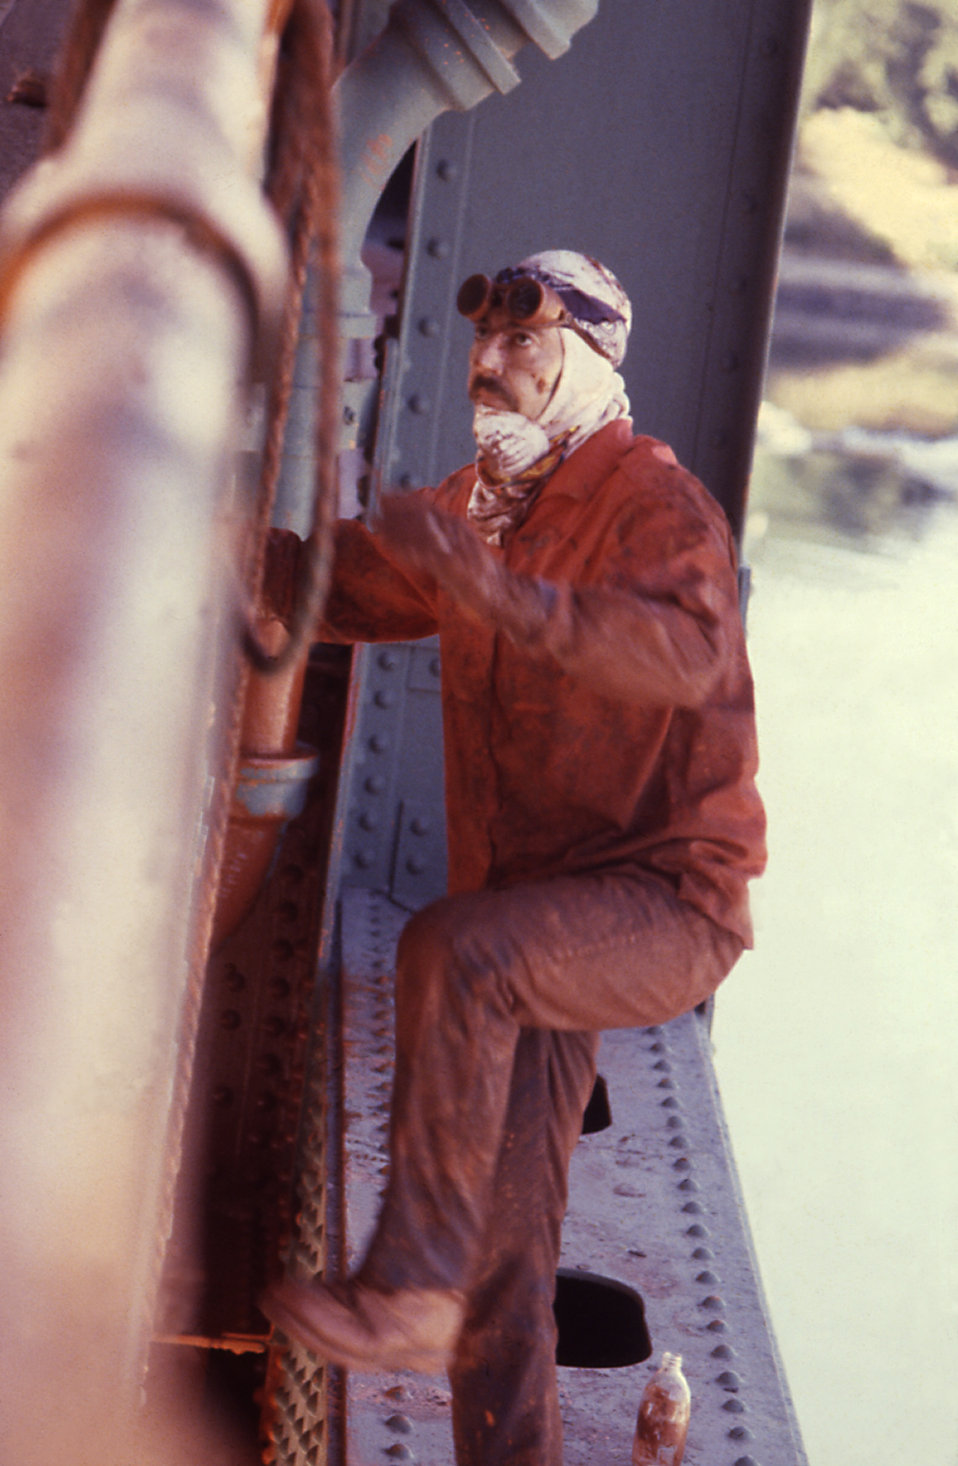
The Tobin Bridge in Boston, MA, shed flakes of lead-based paint onto subjacent neighborhoods and the Mystic River below.